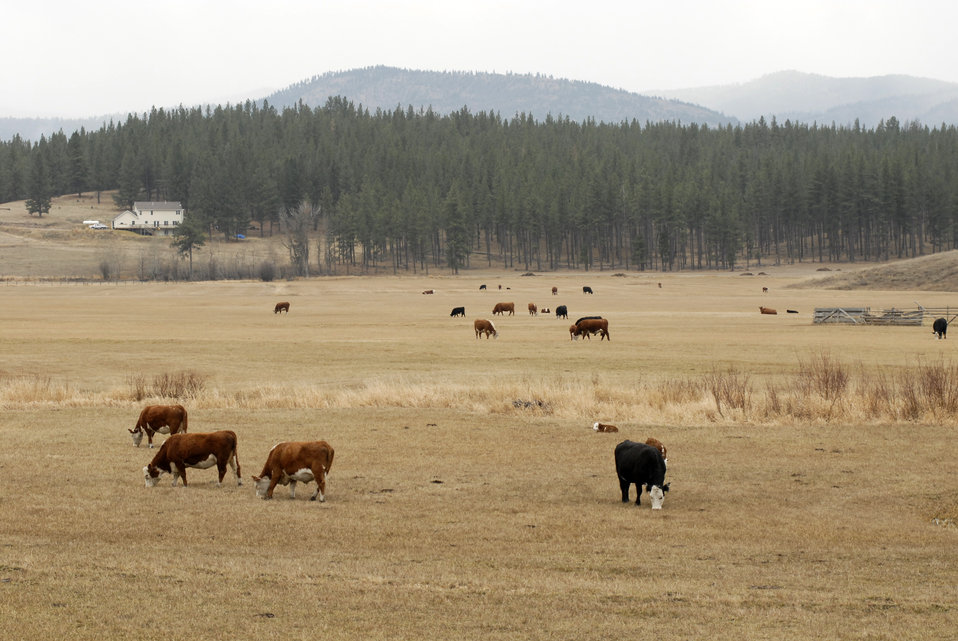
Livestock feed on grass in the National Bison Range Wildlife Refuge in Montana on November 17, 2007. The U.S. Fish and Wildlife Service administers this refuge as part of the National Wildlife Refuge System. The refuge was established in 1908 and is one of the oldest Wildlife Refuges in the nation and was established to support a population of American bison. There are approximately 350-500 American bison. Other large wildlife found on the Range includes elk, whitetail and mule deer, pronghorn antelope, bighorn sheep and black bear.